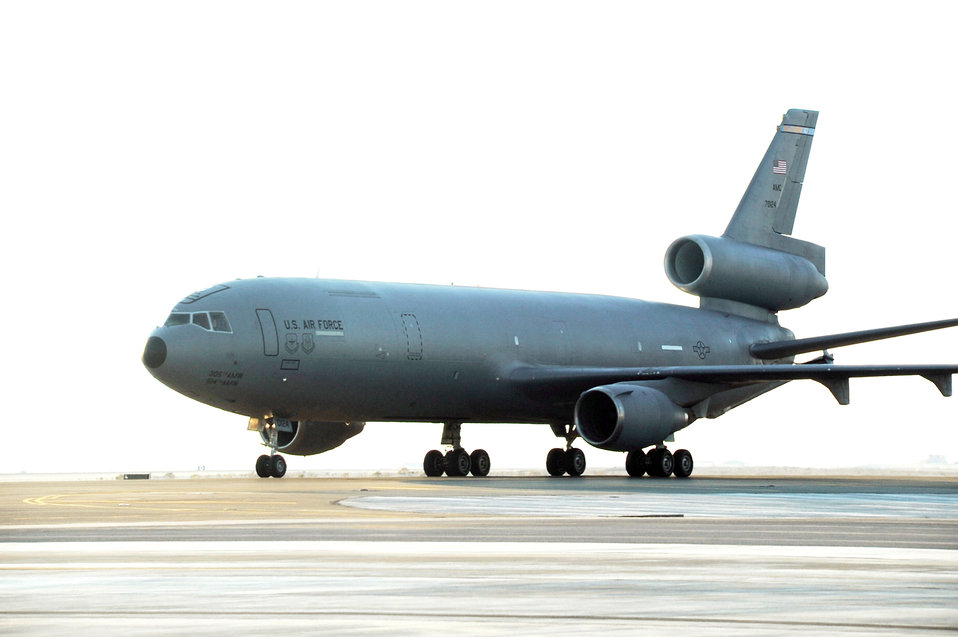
Extending the fight

A KC-10 Extender comes in for a landing at an air base in Southwest Asia Jan. 6, 2010, after completing a combat air refueling mission. This KC-10 is assigned to the 908th Expeditionary Air Refueling Squadron.